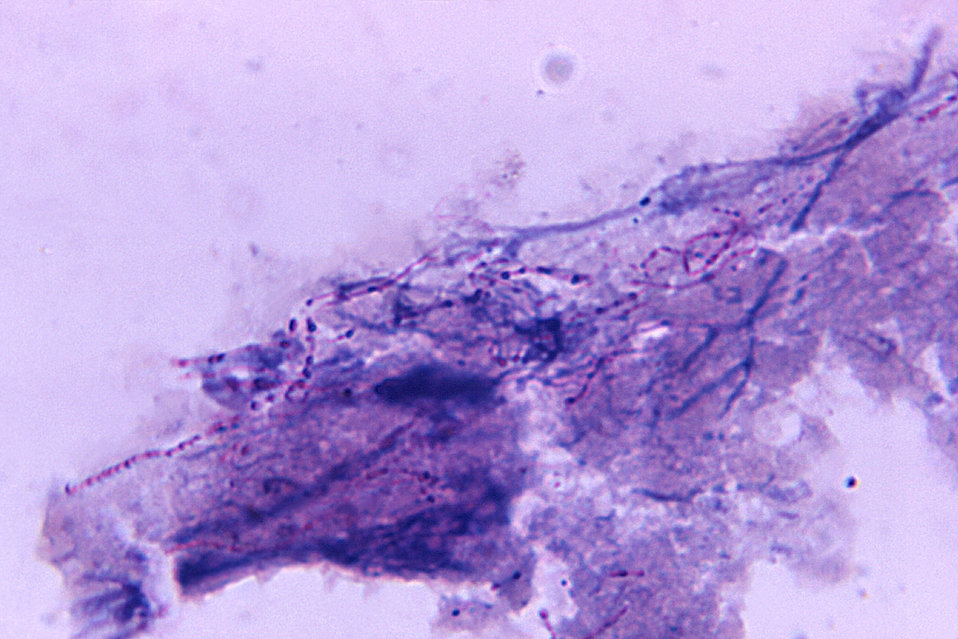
Magnified 1125X, and prepared using a modified-Kinyoun acid-fast staining technique, under photomicrographic analysis, this lung tissue smear revealed the presence of Nocardia asteroids bacterial organisms in a case of nocardiosis.